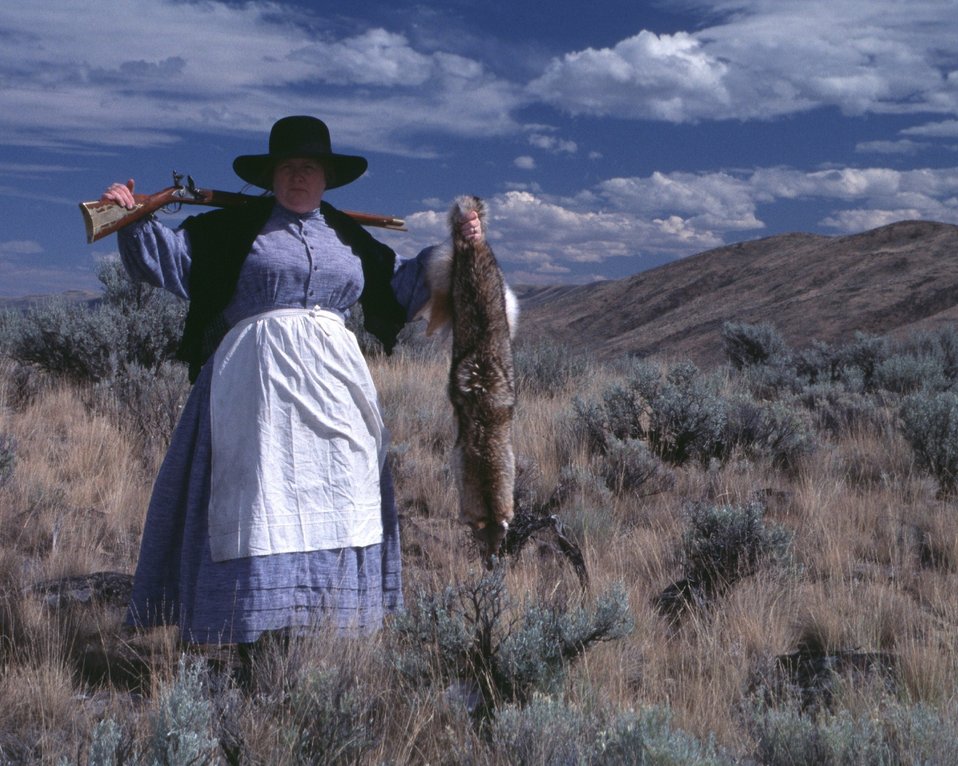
Nancy Harms portrays a woman pioneer with a rifle and a coyote pelt.